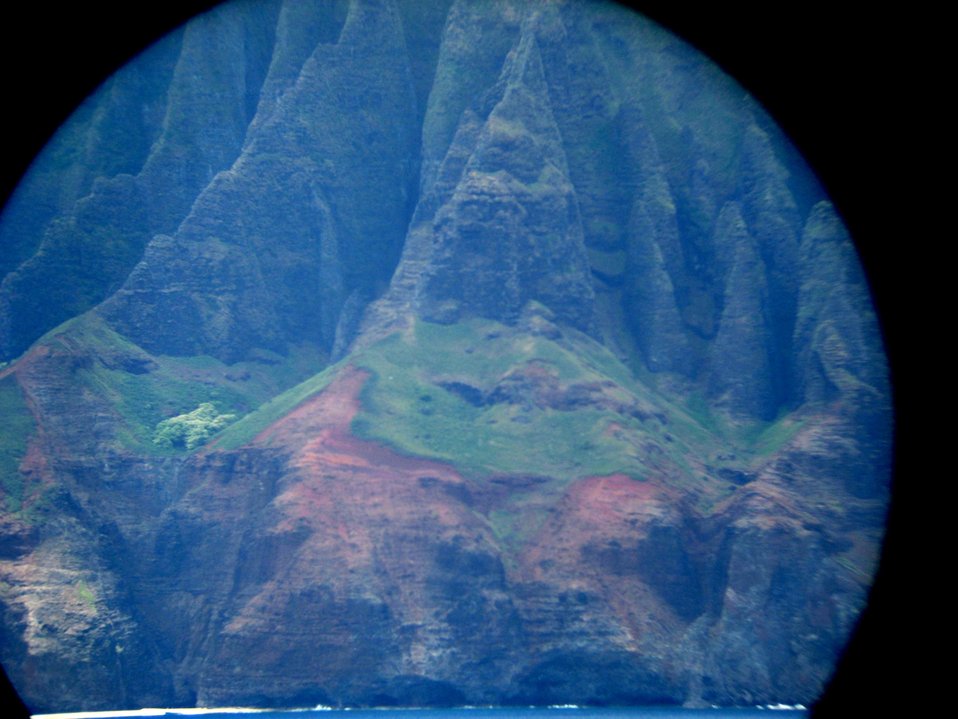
A telescopic view from offshore of the Na Pali coastline.